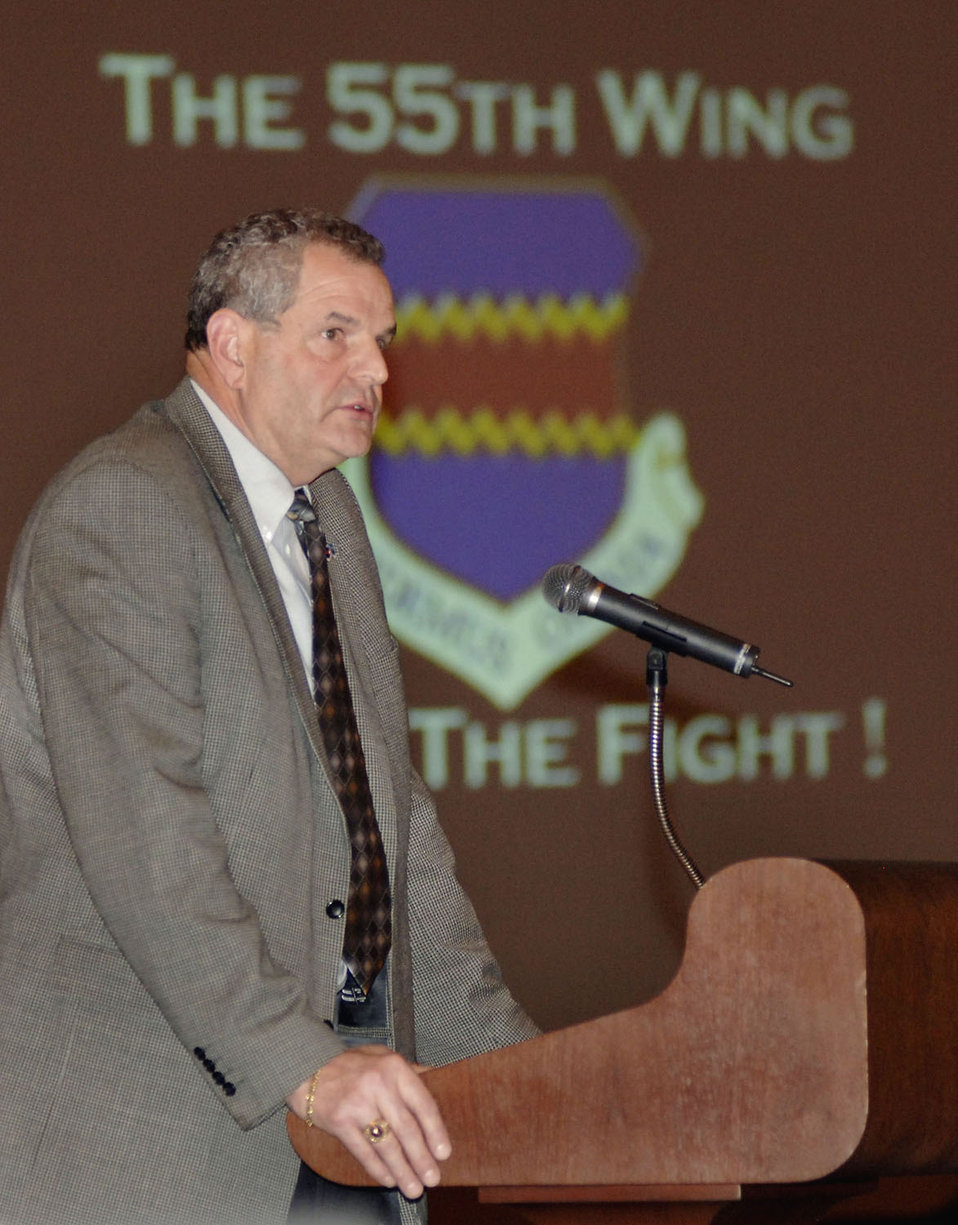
55th Wing marks 6,000 days in Southwest Asia

Retired Air Force Col. David Wolfe reminisces about the early days of the 55th Wing's deployment to Southwest Asia during a ceremony at Offutt Air Force Base, Neb., Jan. 11, celebrating 6,000 straight days of deployment for the unit. Colonel Wolfe was the unit's first deployed commander in 1990 and talked of the early hardships the unit endured.